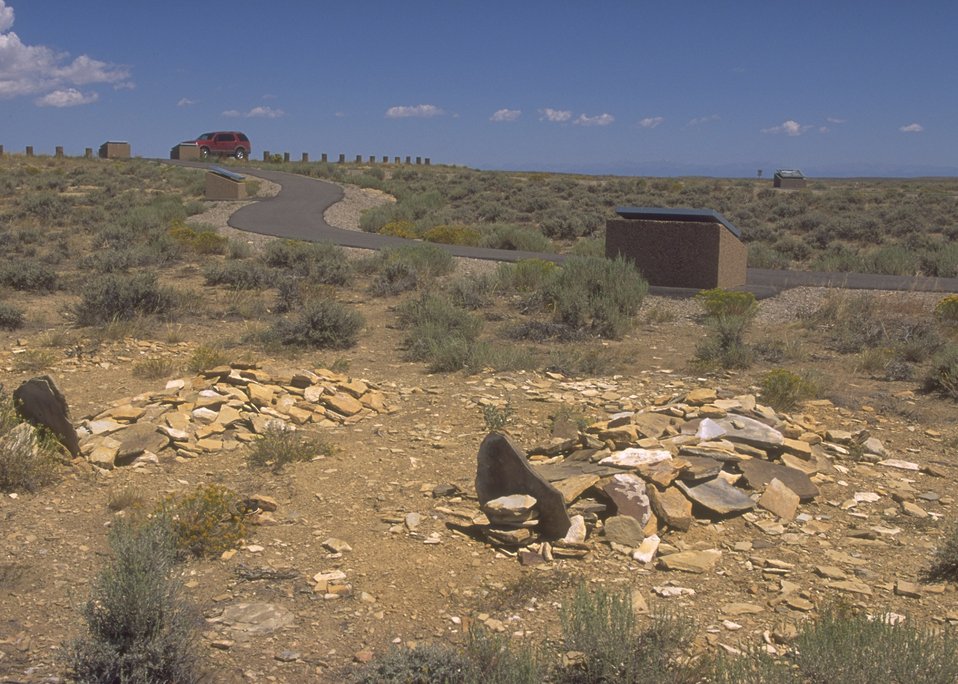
Location of original grave sites (remains have been relocated) at the Indian Emigrant relations interpretive area along the Oregon Trail, Rock Springs Field Office.